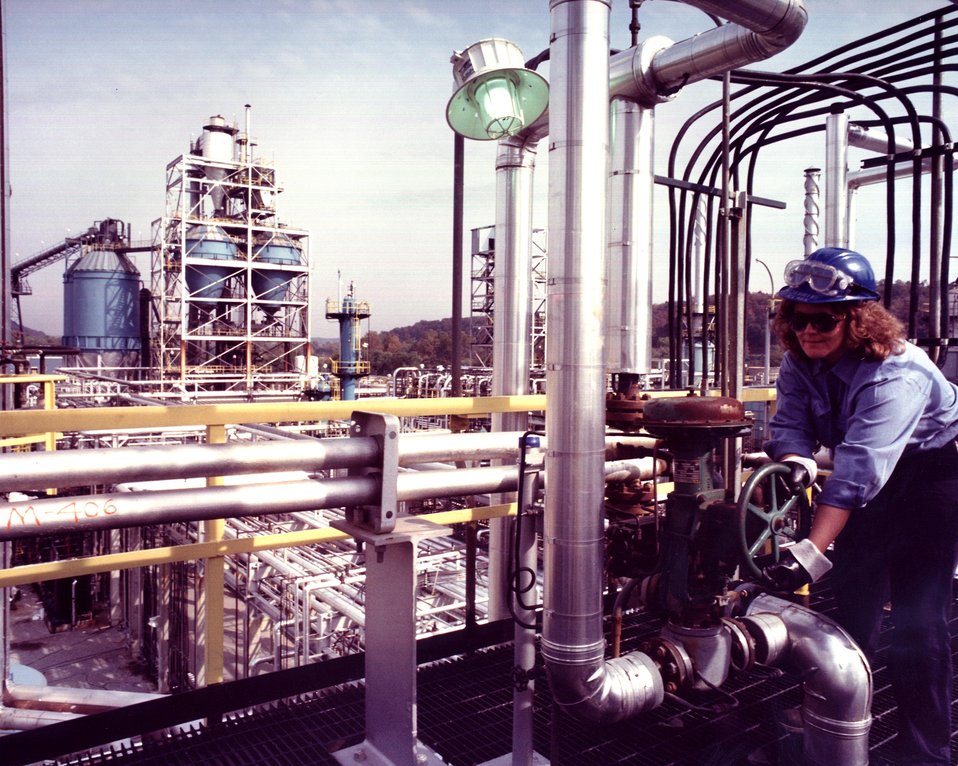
THE H-COAL PILOT PLANT'S COAL PREPARATION AND STORAGE BINS ARE IN THE BACKGROUND.